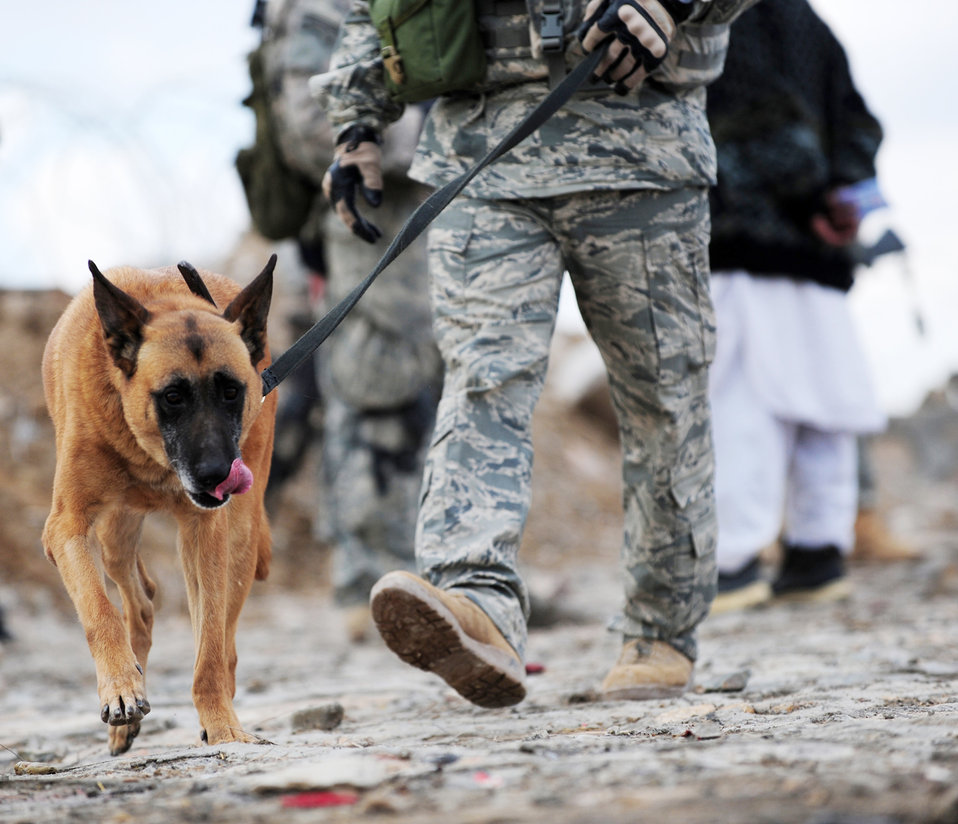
If it's here, I'll find it

Staff Sgt. James Rybacki and his military working dog Torca search for narcotics Jan. 3, 2010, at a checkpoint near Dabaray, Afghanistan.